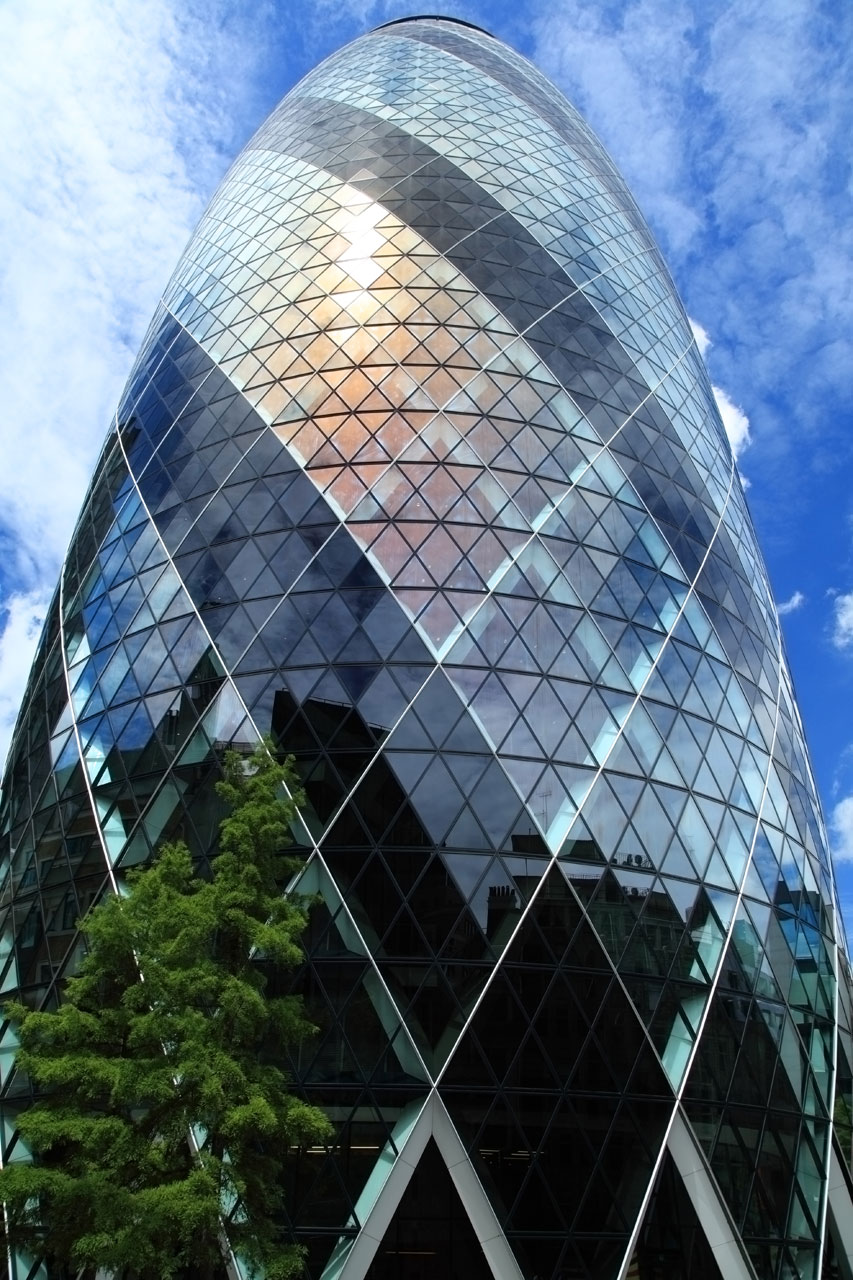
30 st mary axe, also known as the gherkin and the swiss re building in london.